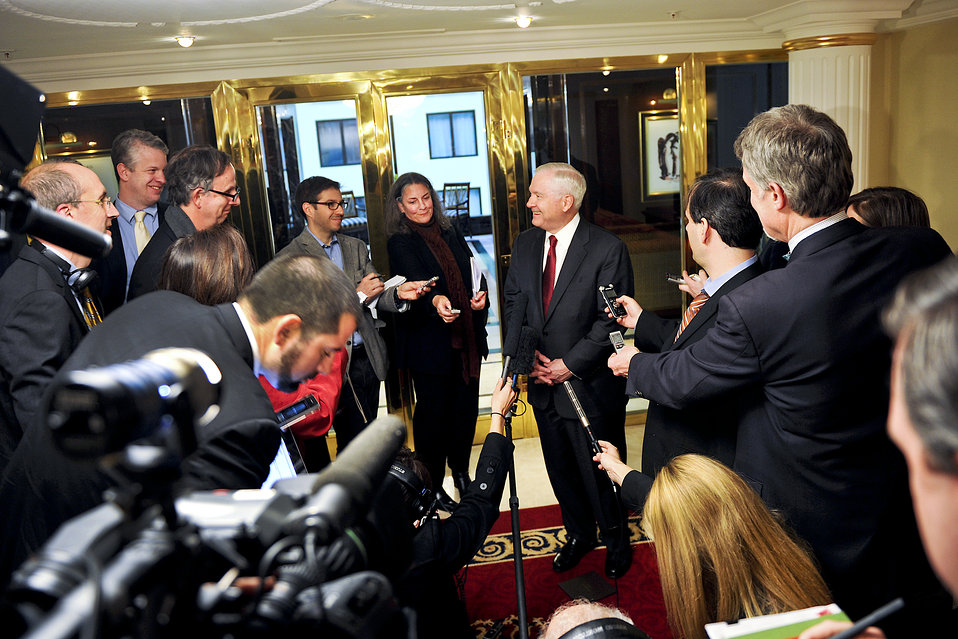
Gates cites efforts to avoid civilian casualties in Libya

Defense Secretary Robert M. Gates speaks with members of the traveling press in Moscow, March 22, 2011.